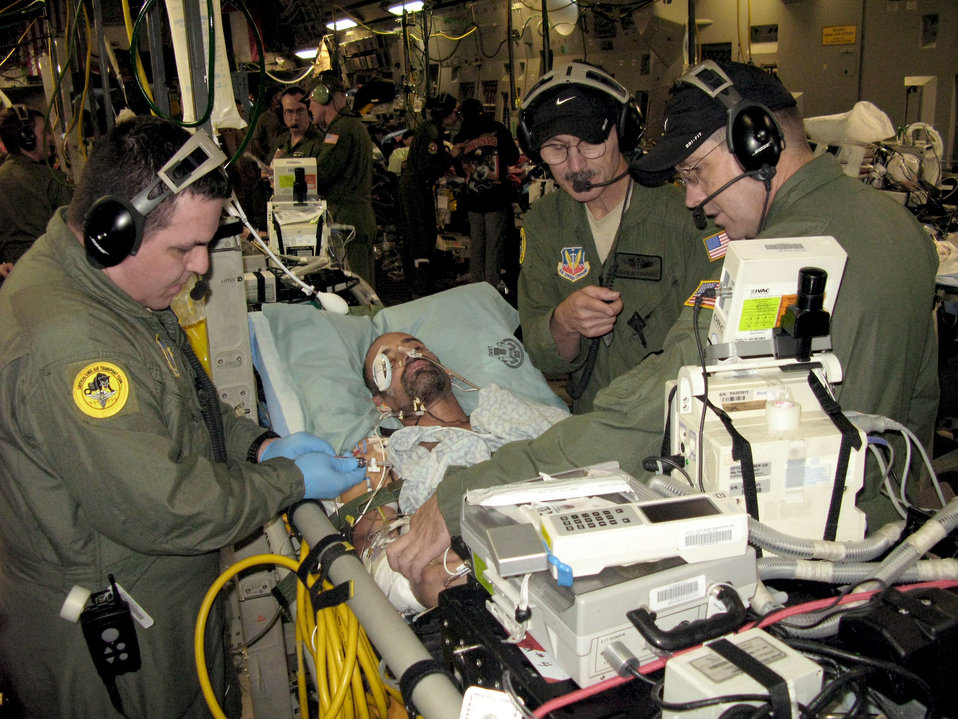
Medical